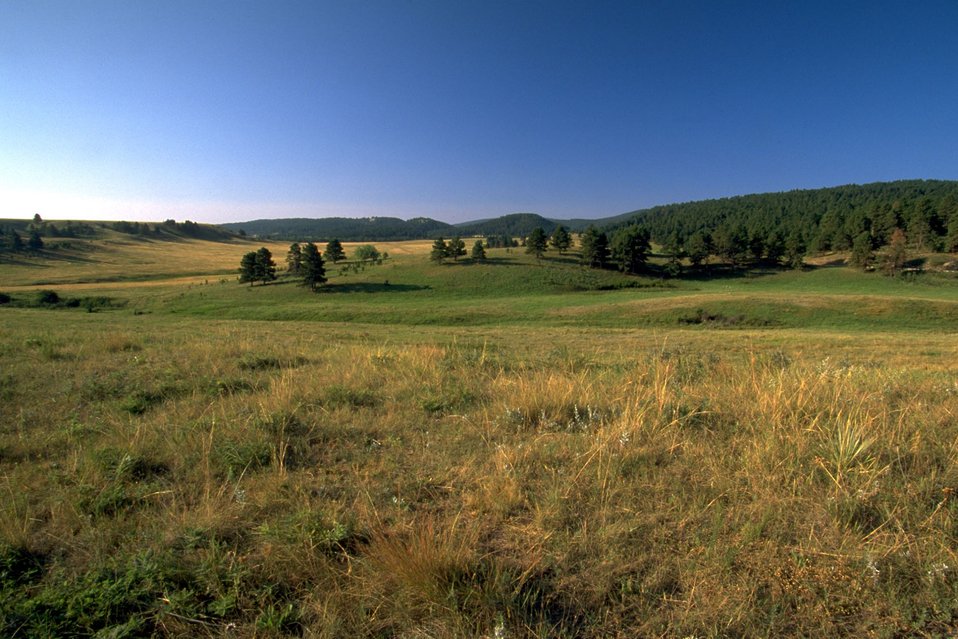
South end of Fort Meade near Cavalry Jumps